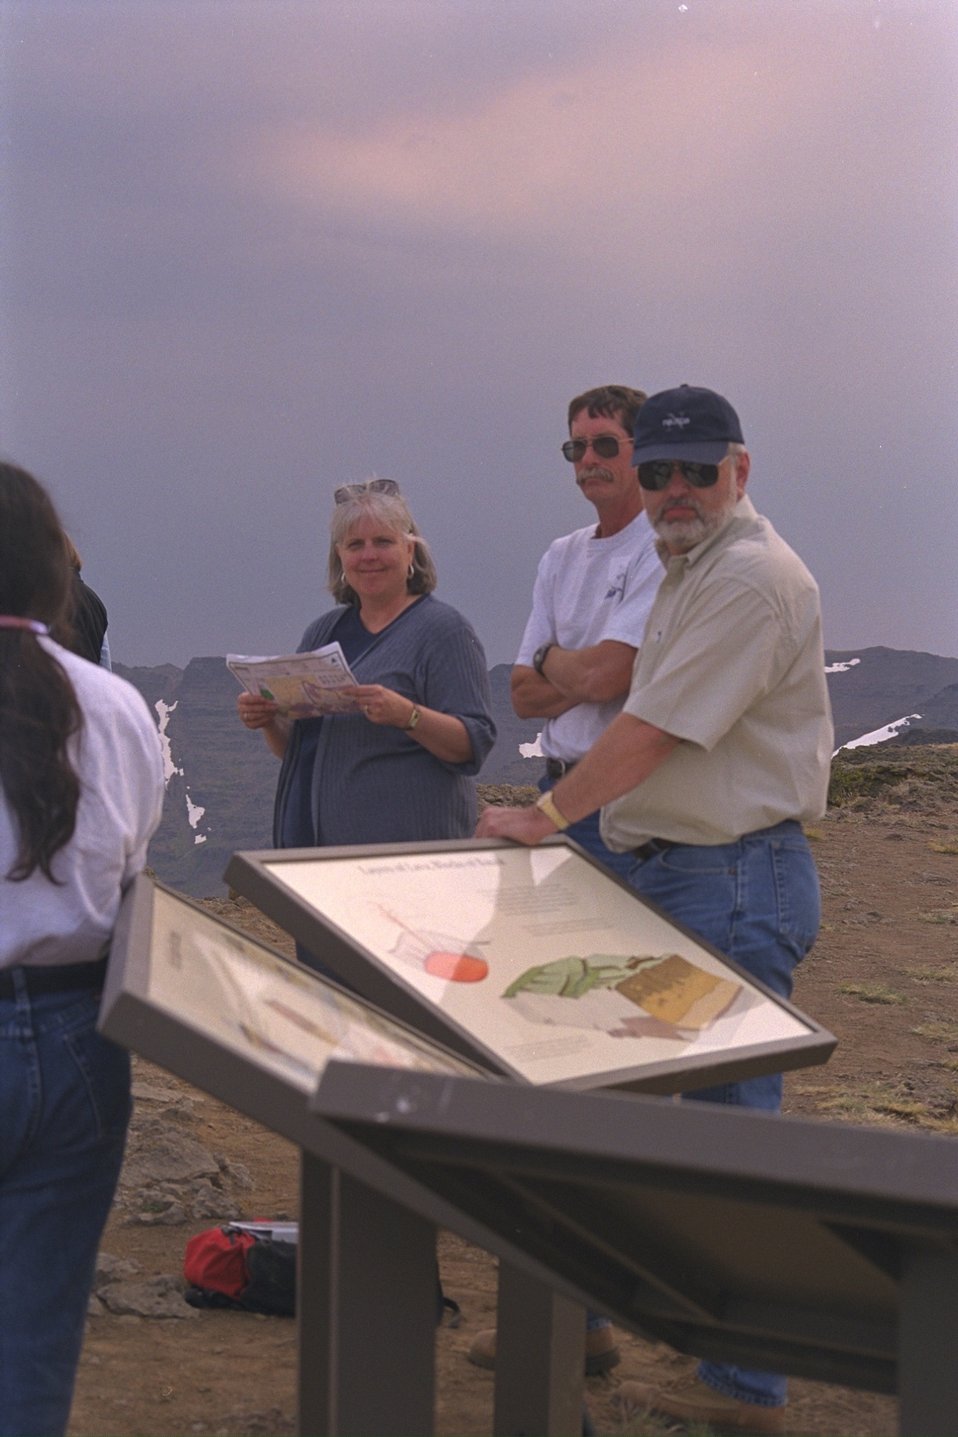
(L - R) Oregon/Washington State Director, Elaine Zielinski, Burns Dist. Botanist, Rick Hall, and associate state director, Chuck Wassinger standing next to Steens Mountain interpretive panels.